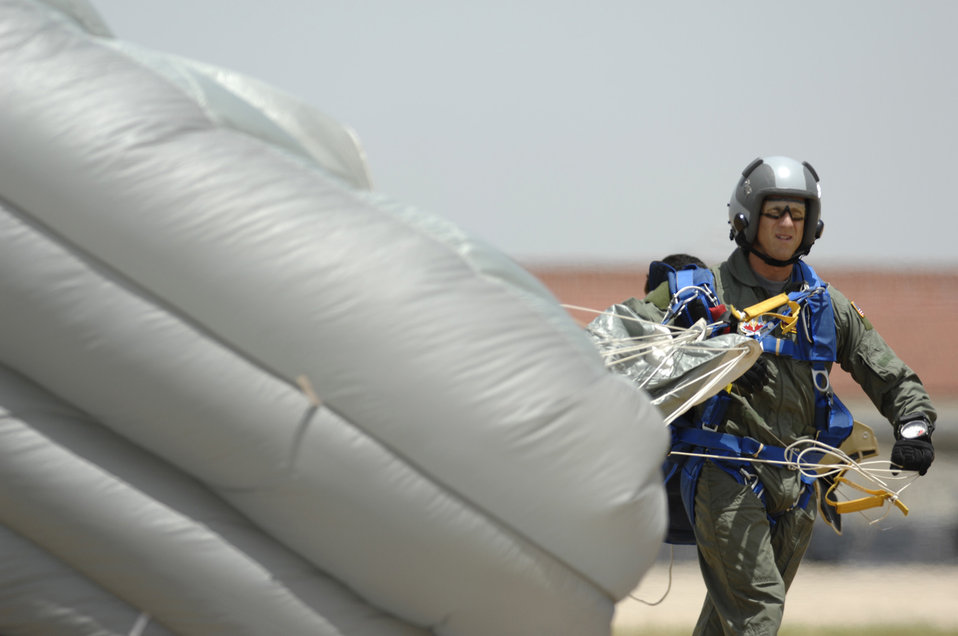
Just blowing in the wind

Capt. Tony Alexander gathers his parachute after jumping out of a Marine C-130 Hercules July 23 over Lackland Air Force Base, Texas. Captain Alexander is attached to the 342nd Training Squadron at Lackland AFB. Airmen from the 342nd along with SERE specialists, Marines, Soldiers and an exchange officer from the Royal Air Force conducted competency airborne training.